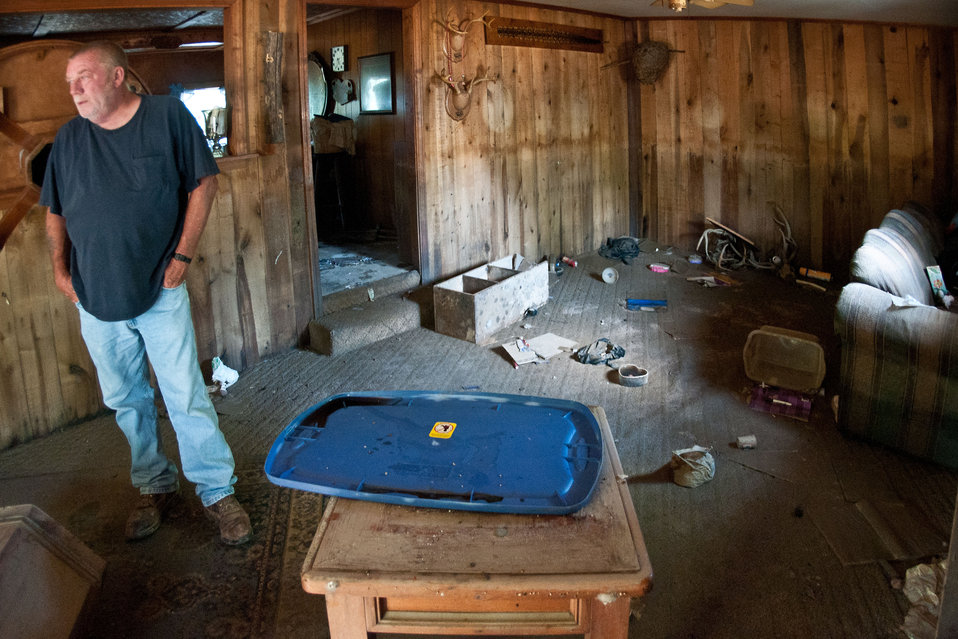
Lauderdale County, TN resident Robert Moffatt looks over the damage to his home when muddy flood waters from the Mississippi River flooded his home near Open Lake on Saturday, May 21, 2011.